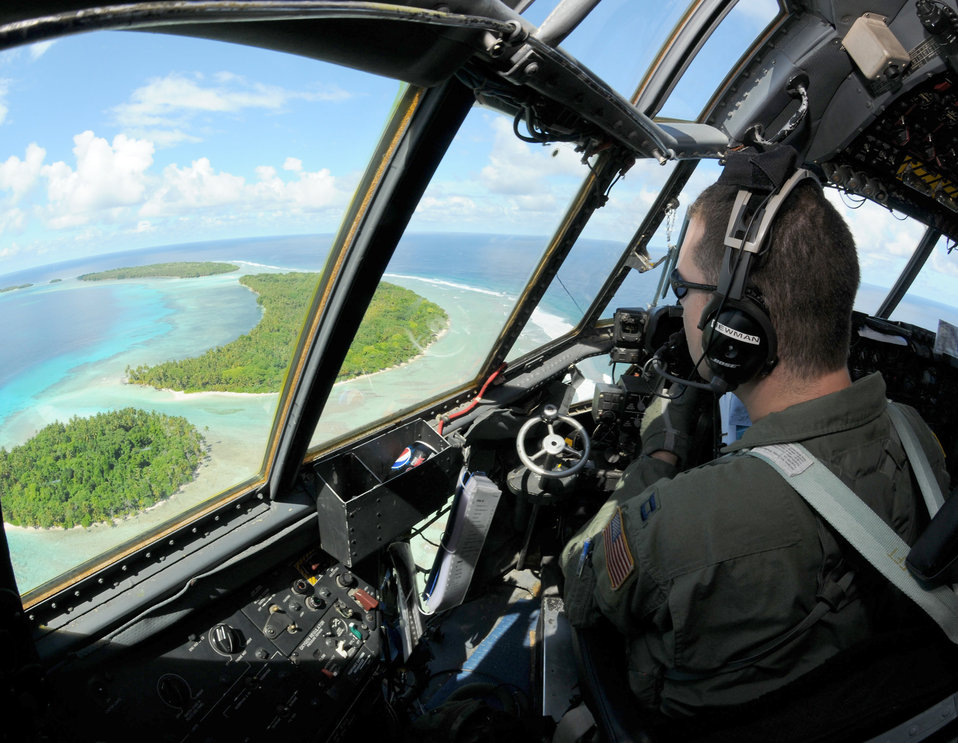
Operation Christmas Drop

Capt. Phillip Newman looks at the Yap Islands during Operation Christmas Drop Dec. 14, 2010. This year more than 60 boxes will be dropped to 55 islands weighing in at more than 20,000 pounds. Captain Newman is a pilot assigned to the 36th Airlift Squadron at Yokota Air Base, Japan.